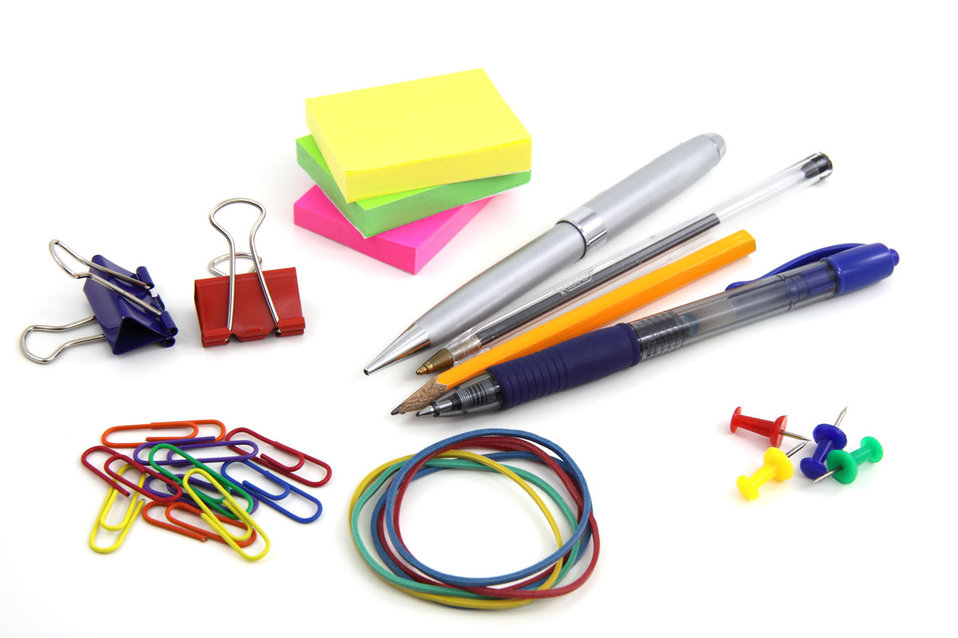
Office stationary on white background.